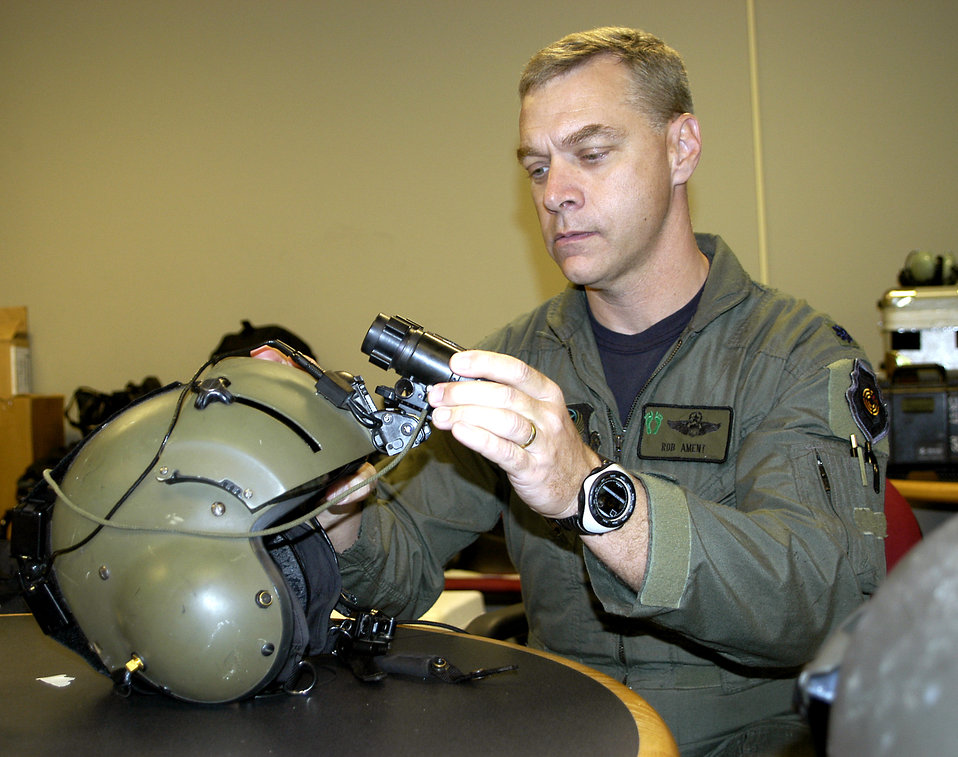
Technology helps save lives

JACKSON, Miss. -- Lt. Col. Rob Ament inspects his night-vision device before a rescue flight. The devices include night-vision goggles, a helmet mounting system and a battery pack. Rescuers on HH-60G Pave Hawk helicopters used the equipment to locate people in New Orleans stranded by Hurricane Katrina. Colonel Ament is the director of operations for Air Force Reserve Command's 920th Rescue Wing at Patrick Air Force Base, Fla.